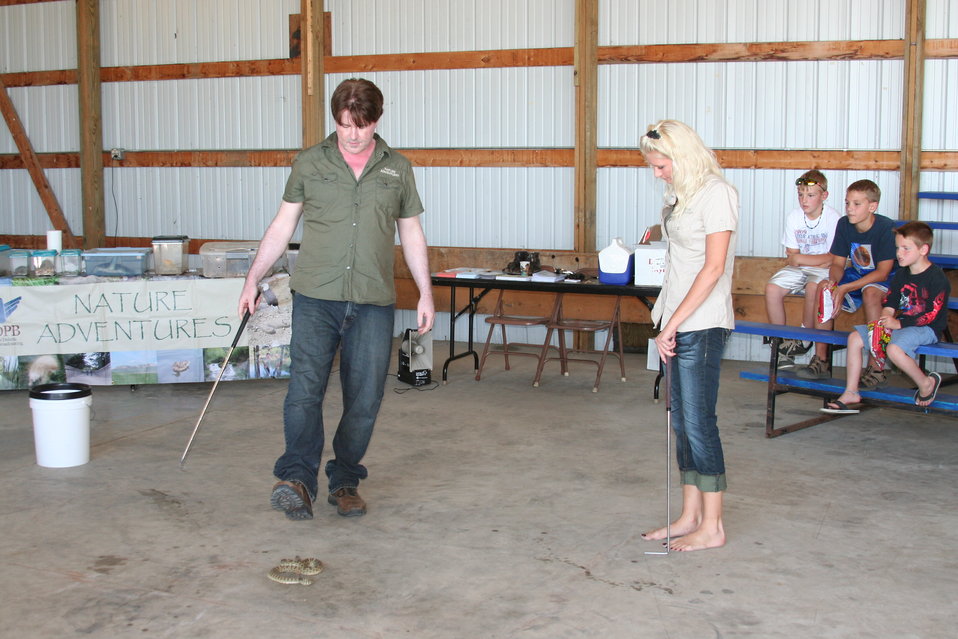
2011 Huron Prairie Fest